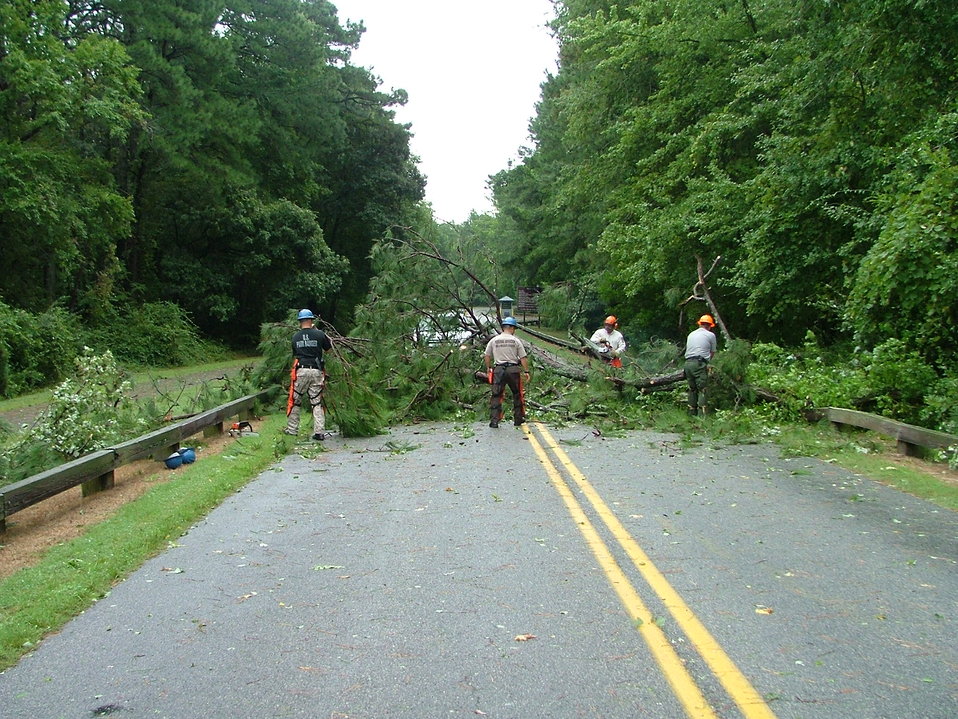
Clearing the debris

U.S. Fish and Wildlife Service & National Park Service staff clear obstruction from road and bike trail at Chincoteague National Wildlife Refuge in Virginia after Hurricane Irene.